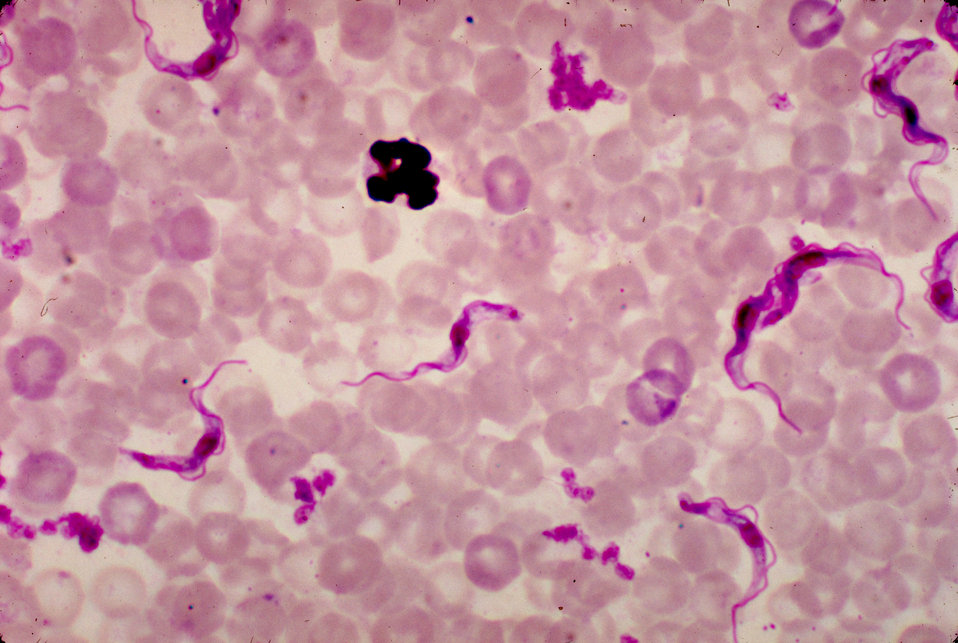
This is a micrograph of a rat blood smear revealing Trypanosoma brucei parasites using a Giemsa stain technique.